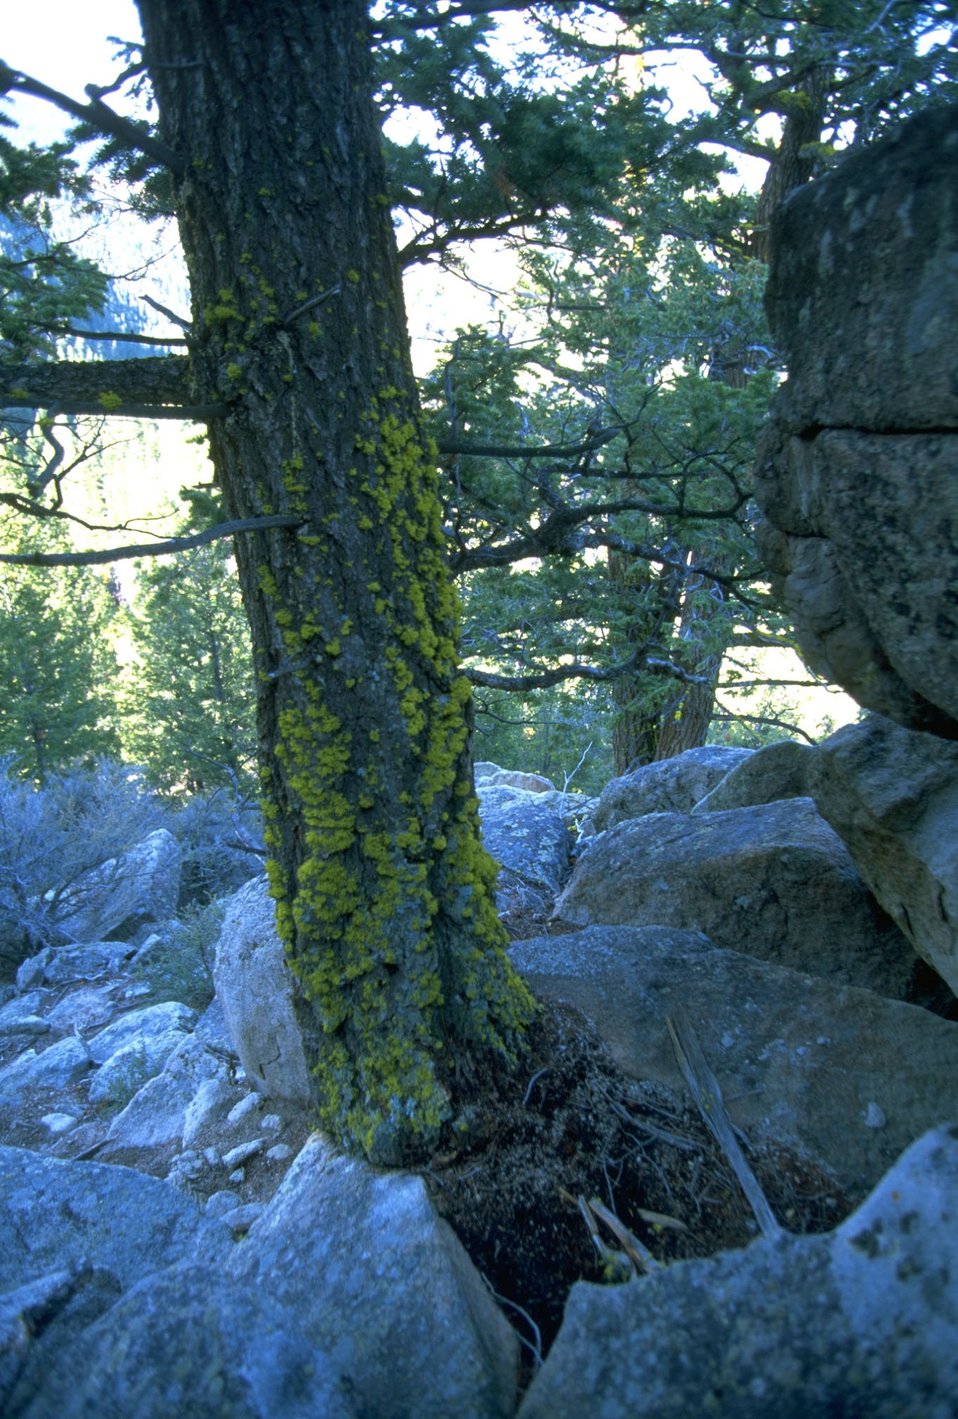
Closeup of moss growing on a tree trunk